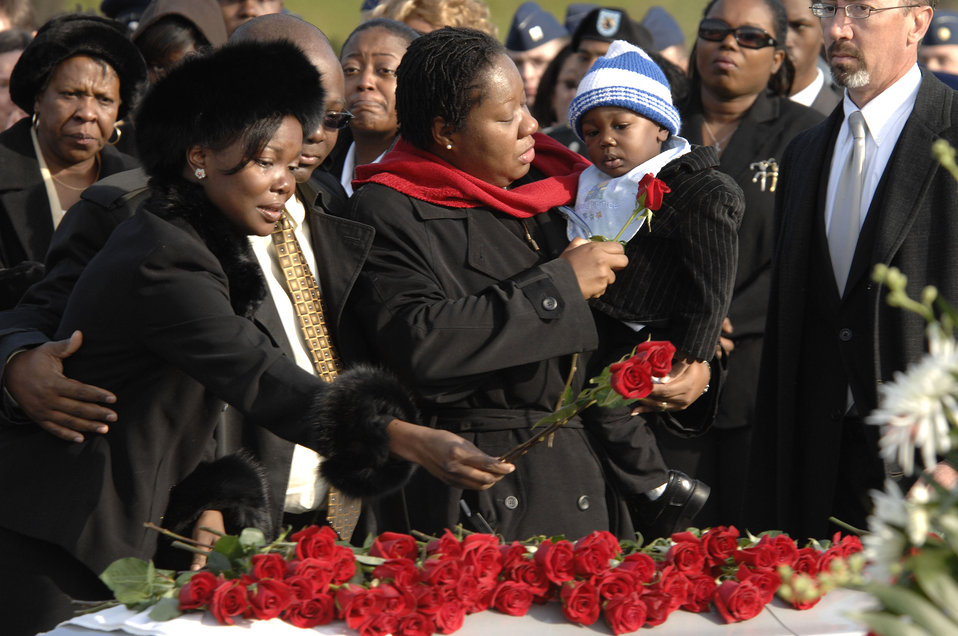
One final salute

Pernetha Evans places a rose among the many that lay on the casket of her husband, Capt. Kermit Evans, during his funeral Dec. 12 at Arlington National Cemetery. More than 200 friends and relatives gathered to pay their respects to Captain Evans, a member of the 27th Civil Engineering Squadron Explosives Ordnance Disposal Flight at Cannon Air Force Base, N.M. He was deployed to Iraq when the helicopter he was a passenger in made an emergency landing and crashed. He was one of the four out of 16 who were killed as a result of the crash. He is survived by his wife, Perneatha and Kermit Jr., their 13-month-old son.